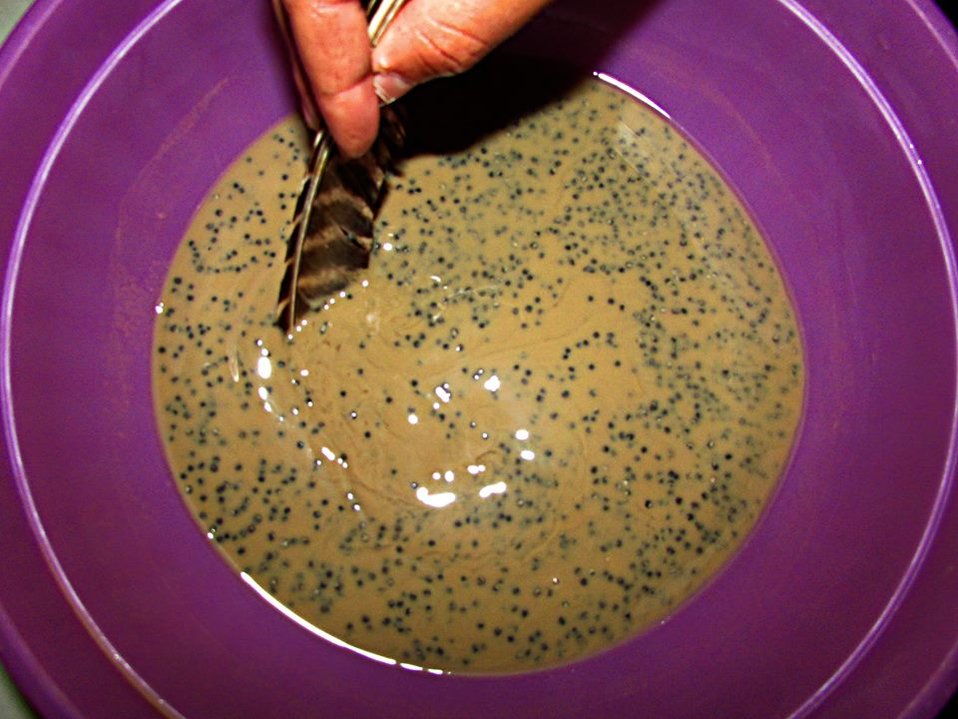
Turkey Feathers?

Did you know that turkeys play a vital role at the hatchery? When we spawn our endangered pallid sturgeon and threatened paddlefish, we use a turkey feather to stir the eggs! The turkey feather is stiff enough for us to roll the eggs, but gentle enough to not harm them. Here is a picture from the paddlefish fertilization process.